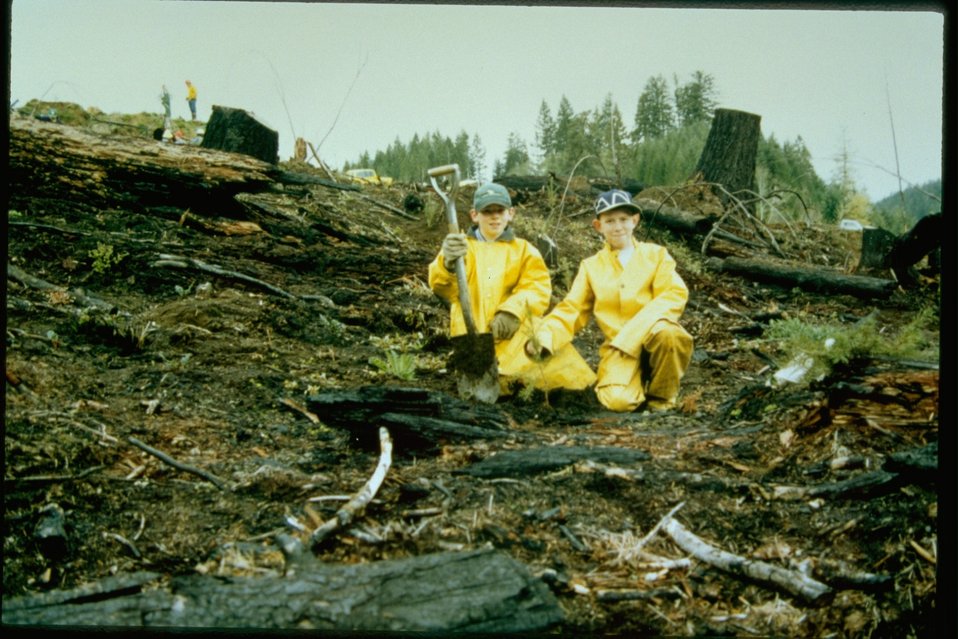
Lower Umpqua Treeplanting.